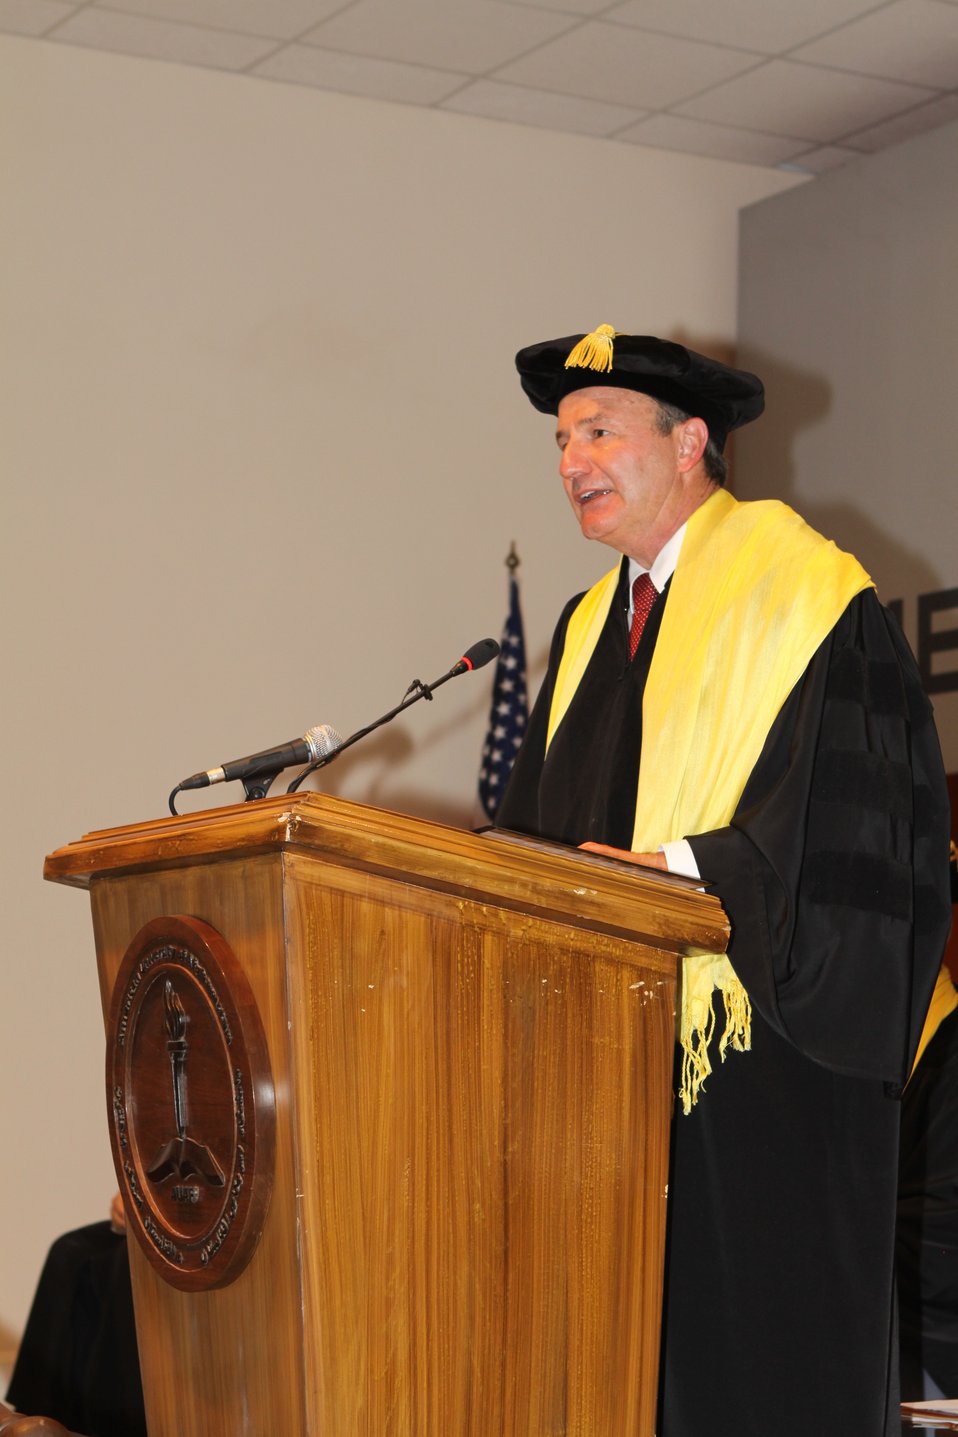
100526 AUAF Graduation 208